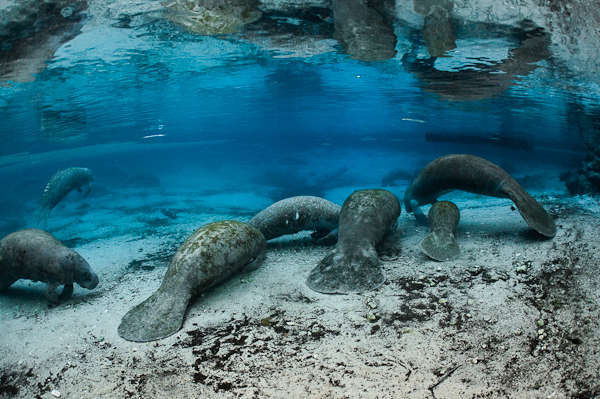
Endangered Florida manatee (Trichechus manatus), Crystal River National Wildlife Refuge

Photo credit: Carol Grant

The Crystal River National Wildlife Refuge, was established in 1983 specifically for the protection of the endangered West Indian Manatee. This unique refuge preserves the last unspoiled and undeveloped habitat in Kings Bay, which forms the headwaters of the Crystal River. The refuge preserves the warm water spring havens, which provide critical habitat for the manatee populations that migrate here each winter.